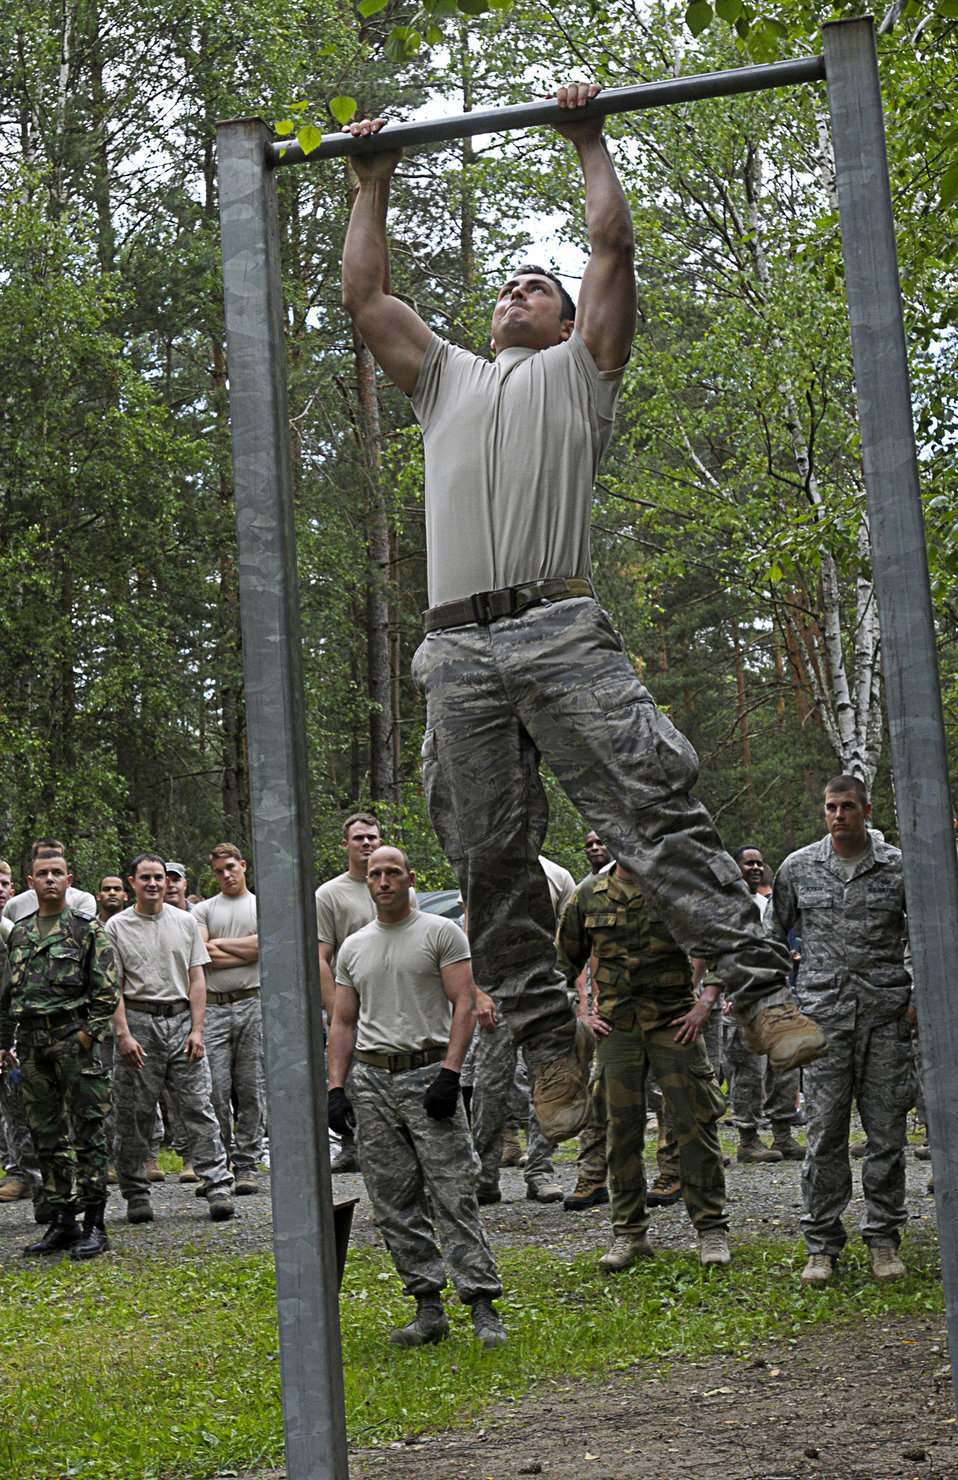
Raising the bar

Staff Sgt. Nathan Archambeault participates in an obstacle course competition June 23, 2011, as part of Allied Strike 2011 at Grafenwoehr Training Area, Germany. Sergeant Archambeault is assigned to the 4th Air Support Operations Group.